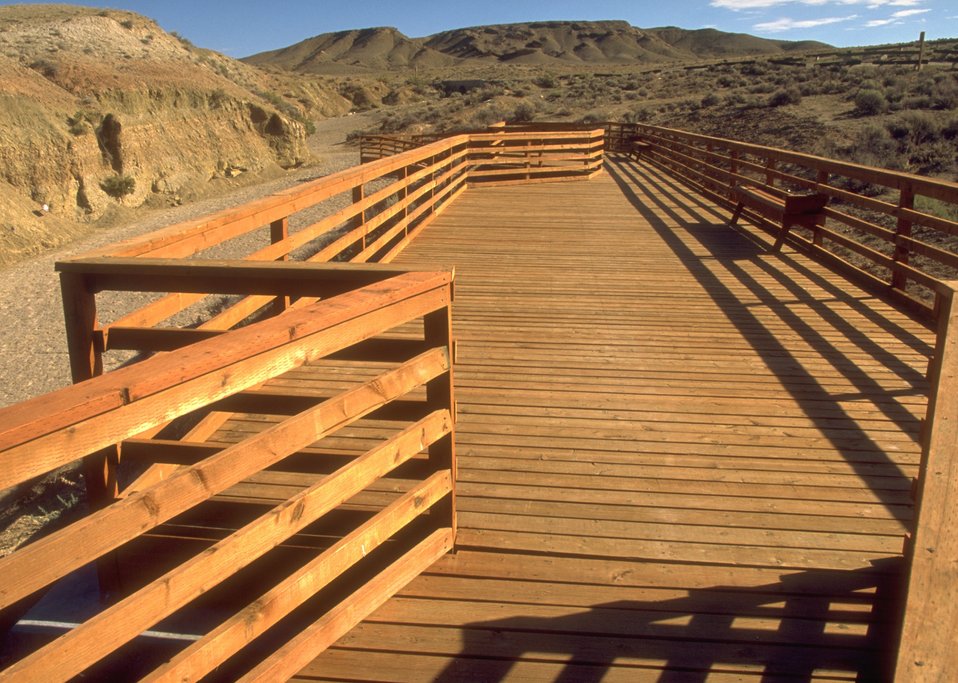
Red Gulch Dinosaur Tracksite showing some of the developed facilities, along Red Gulch/Alkali Back Country Byway, Worland Field Office.